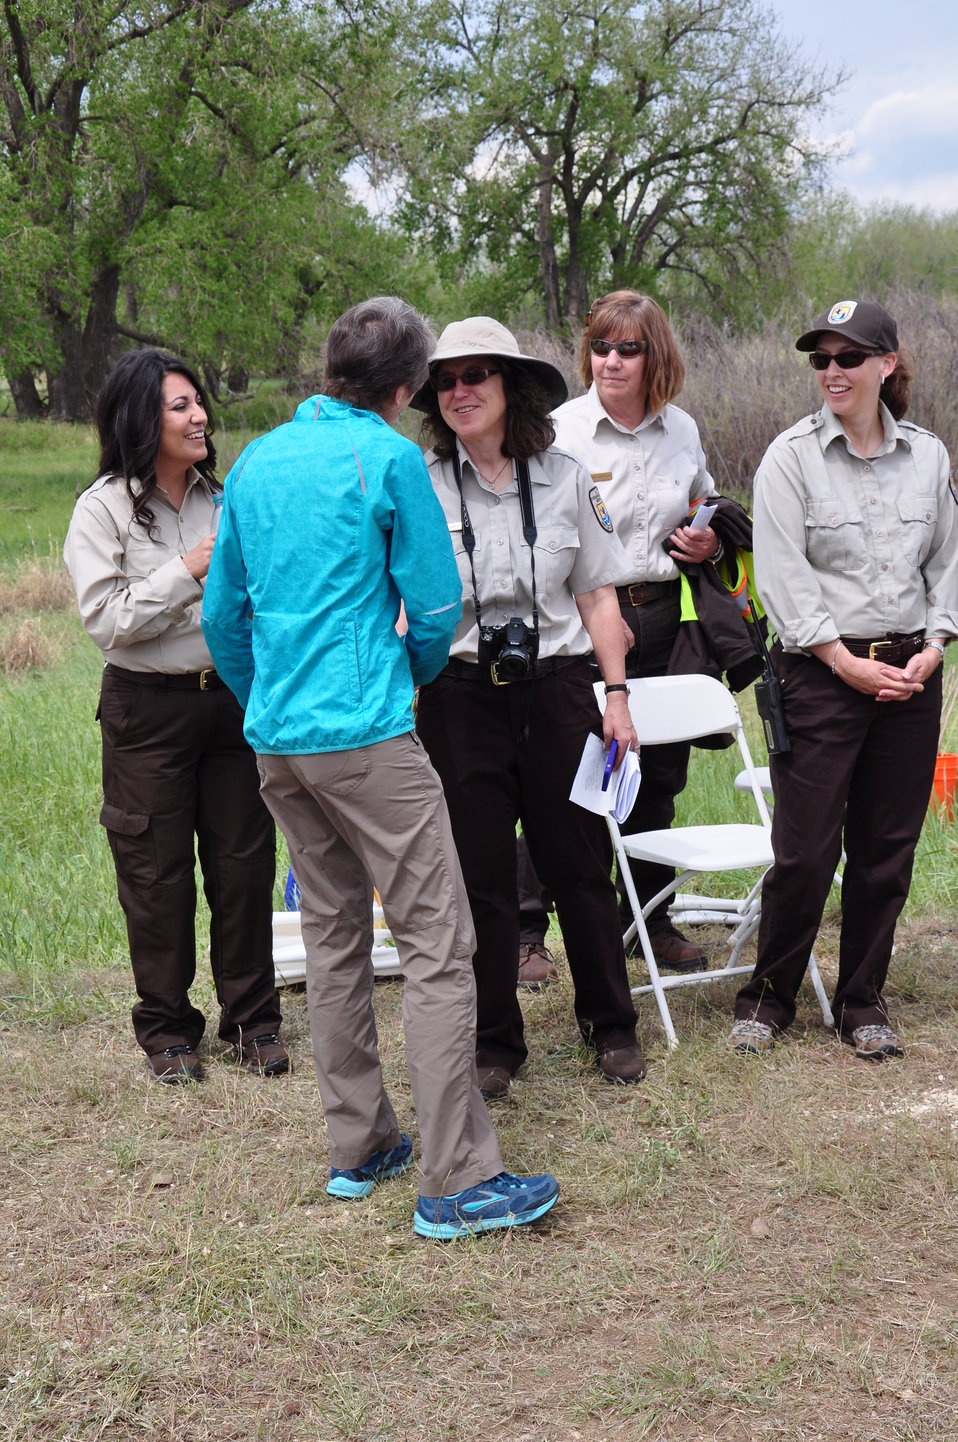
Secretary Jewell Greeting Refuge Staff